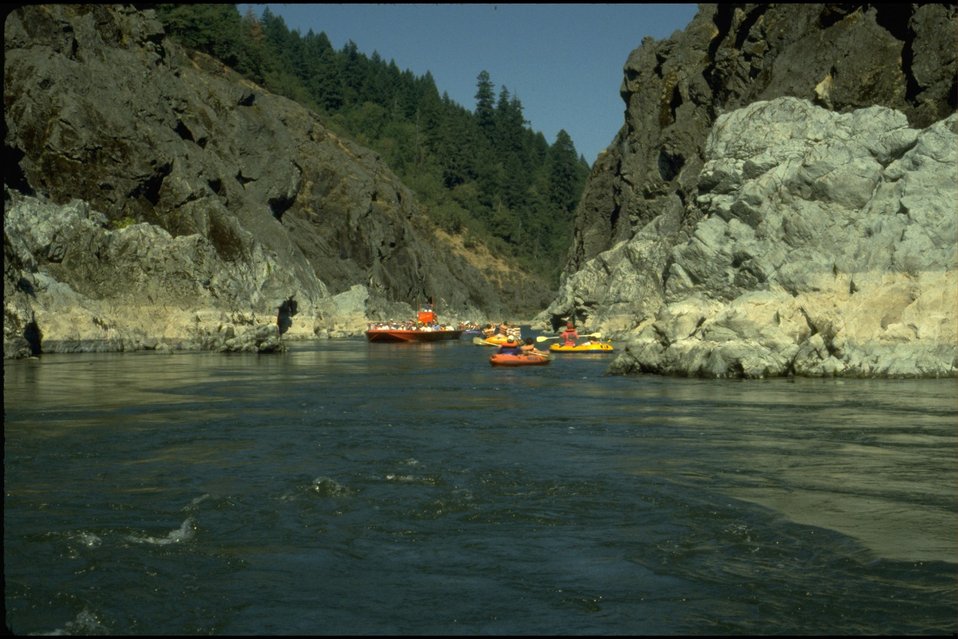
Rogue River; Hellgate Canyon. Hellgate Recreation Area - mix of boats: motorized tour boats, rafts, and inflatable rafts.